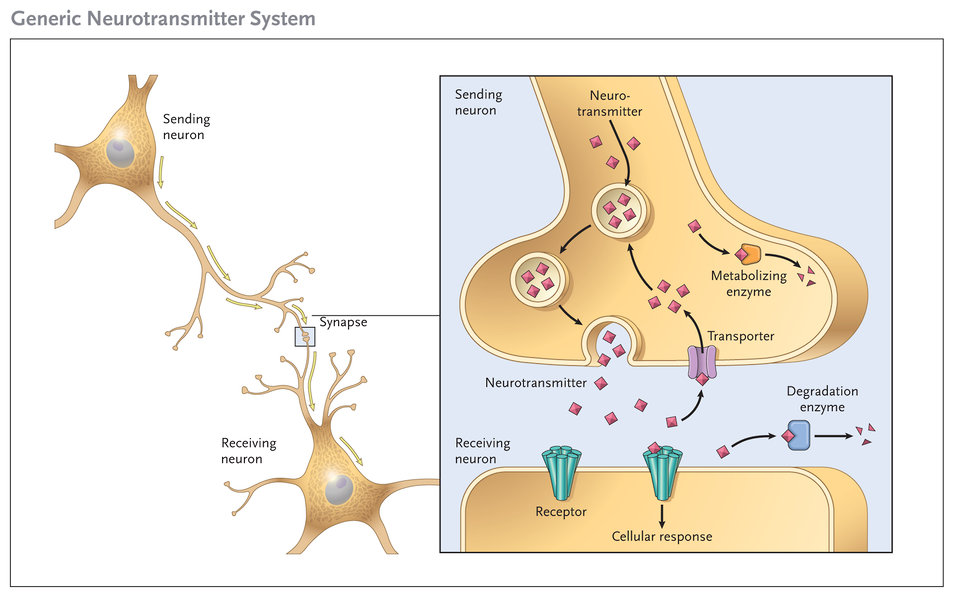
generic neurotransmitter system